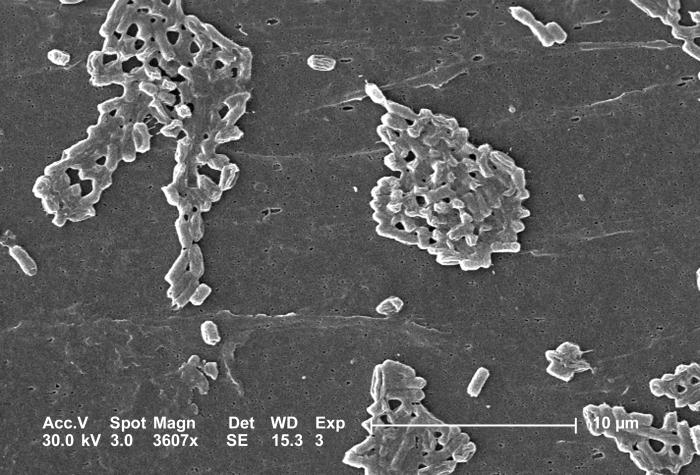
This scanning electron micrograph (SEM) depicts a number of rod-shaped Escherichia coli bacteria, some of which have formed colonial groupings, while others have remained isolated as single cells; Magnification 3607x.